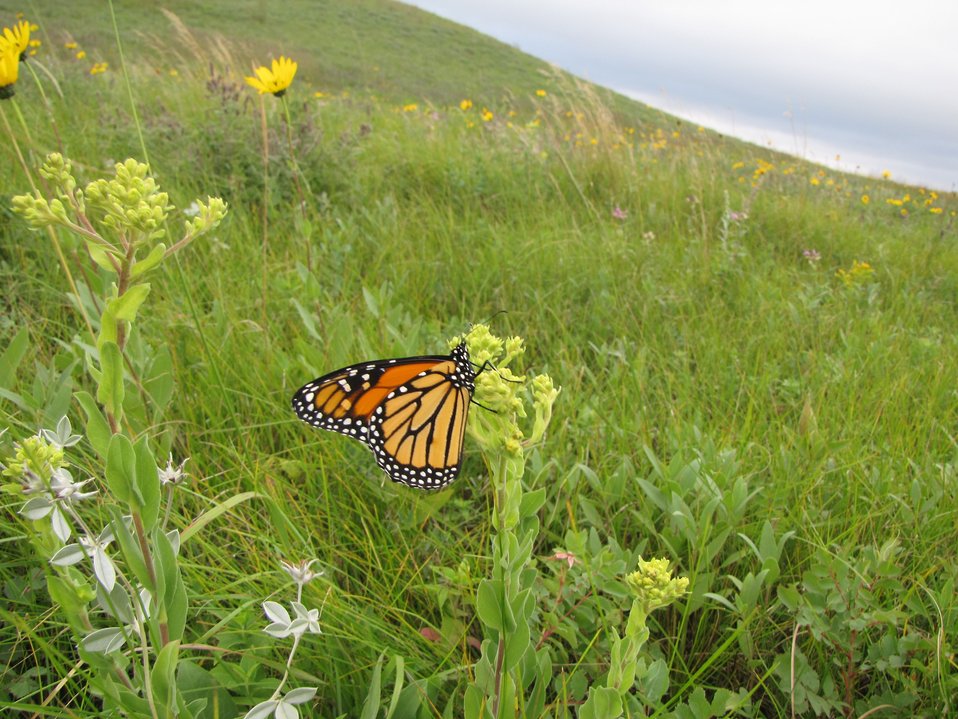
Pocket of habitat

Sullys Hill Game Preserve, a national wildlife refuge. Fort Totten, North Dakota. USFWS